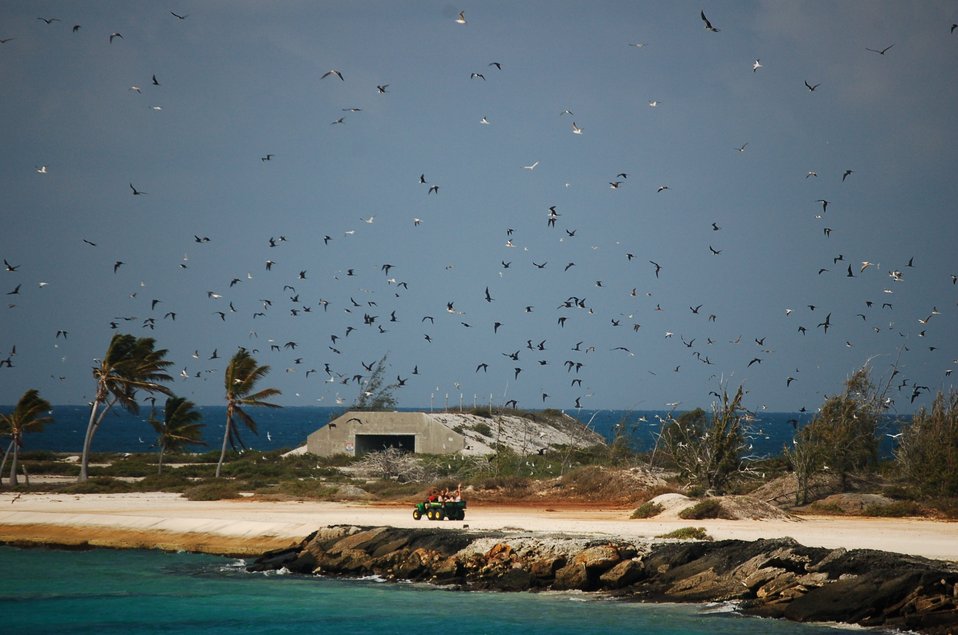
Flock of birds - Johnston Atoll NWR